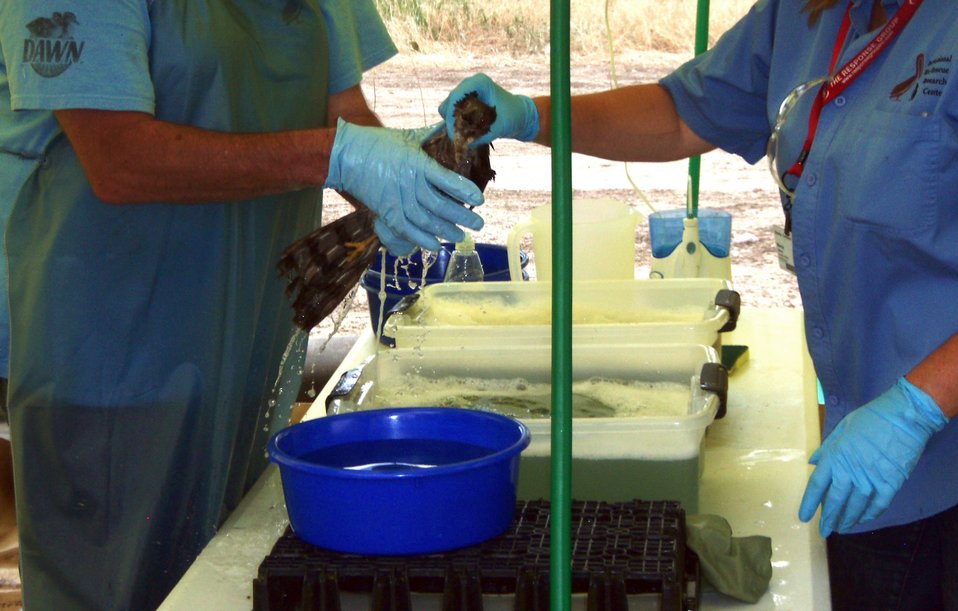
Cleaning of a Cooper's Hawk

A male Cooper’s hawk (Accipiter cooperii) receives a thorough cleaning to remove oil threatening the bird’s health from International Bird Rescue staff at a bird rehab center in Billings, Mont., July 18. The bird of prey’s habitat intersects with areas affected by the Silvertip oil spill, which released approximately 1,000 barrels of oil into the high-flowing Yellowstone River July 1. The bird recovered from the oiling following the cleaning and was released into suitable non-oiled habitat in Montana.